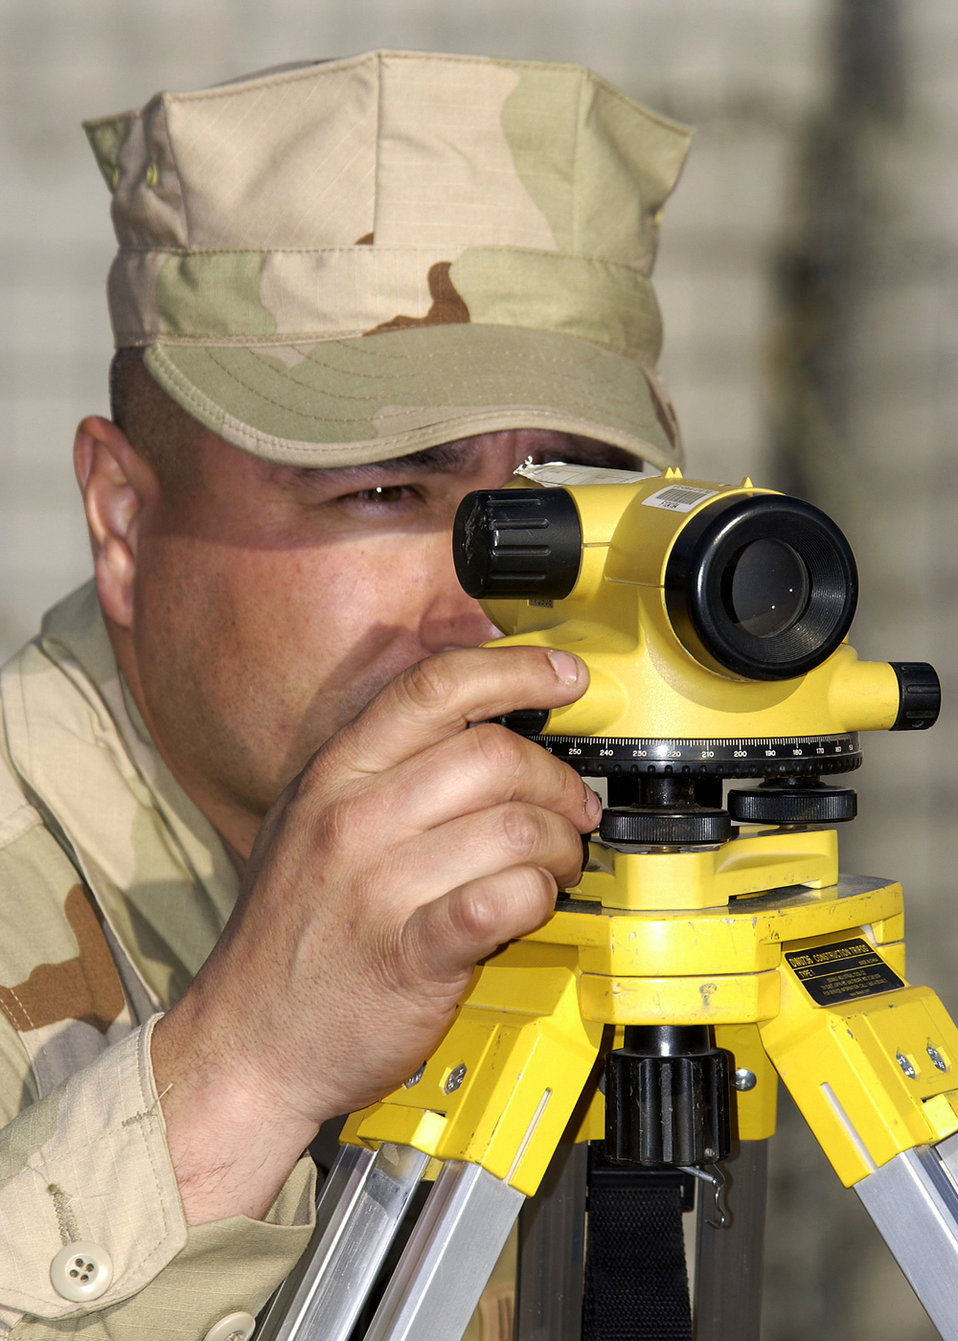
'Dirt Boyz' digging in

MANAS AIR BASE, Kyrgyzstan -- Tech. Sgt. Rob Carrillo uses a sighting tram at a fuels farm construction site here. Sergeant Carrillo and other Airmen of the 376th Expeditionary Civil Engineer Squadron will move more than 63 million pounds of dirt by the end of the project. He is deployed from Ellsworth Air Force Base, S.D.